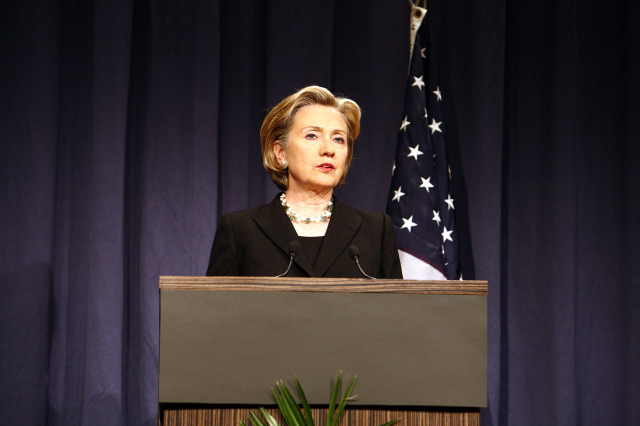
Press Conference With Russian Foreign Minister

Press conference after dinner meeting between U.S. Secretary of State Hillary Rodham Clinton and Russian Foreign Minister Sergey Lavrov in Geneva, Switzerland March 6, 2009.